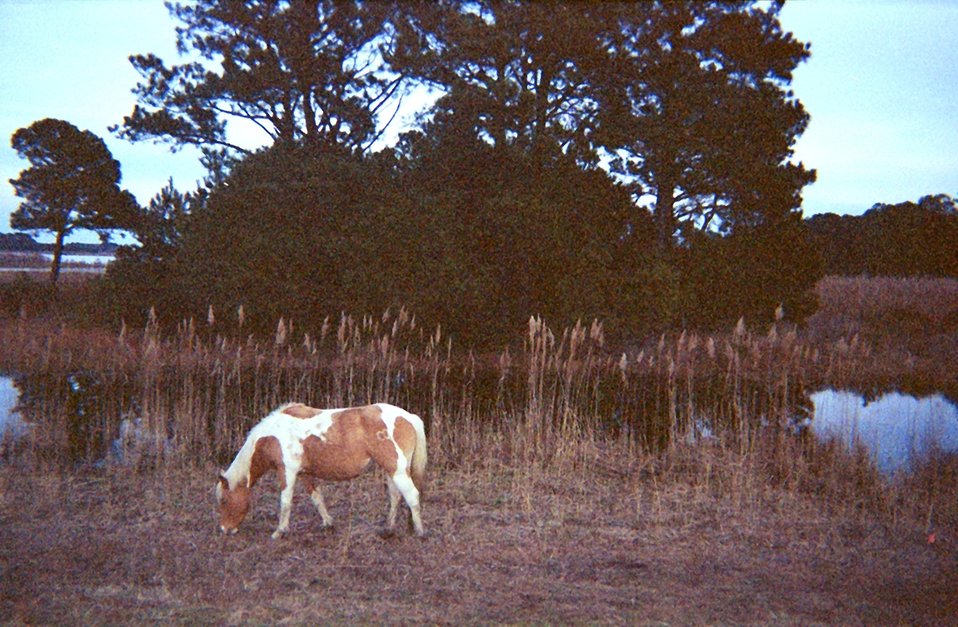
A budding Misty of Chincoteague grazes on Assateague Island.